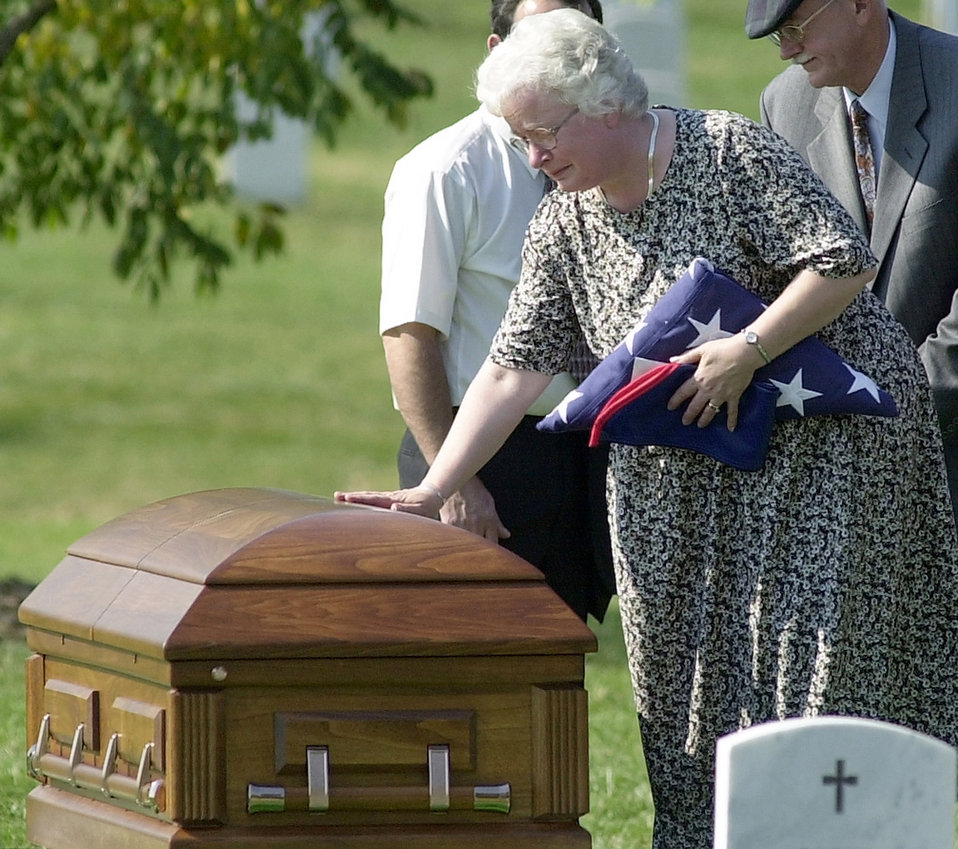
Goodbye

ARLINGTON NATIONAL CEMETARY, Va. -- Mary Andrews, the mother of Master Sgt. Evander Earl Andrews, Operation Enduring Freedom's first reported American casualty, says goodbye to her son at his final resting place here Oct. 22. Andrews, a native of Solon, Maine, was assigned to the 366th Civil Engineer Squadron at Mountain Home Air Force Base, Idaho as a heavy equipment operator. He died Oct. 10, in a forklift accident while building an airstrip in Al Udeid Air Base, Qatar, a peninsula in the Persian Gulf. Andrews is survived by his wife Judy, four children ranging in ages from 2 to 9 years old, a sister and his parents Mary and Obder Andrews.